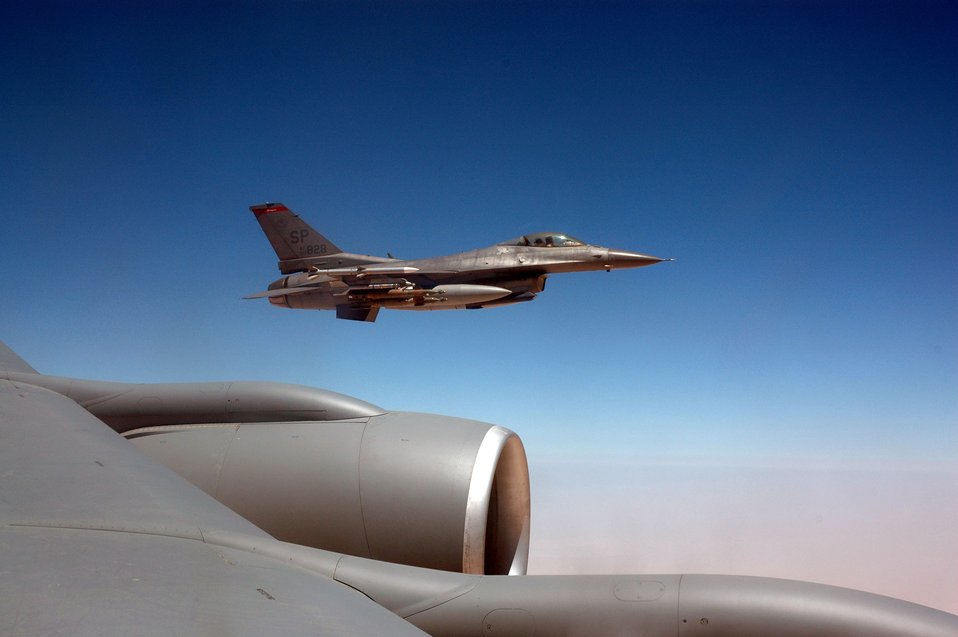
Airpower Summary for June 10, 2007

An F-16 Fighting Falcon flies beside a KC-135 Stratotanker after receiving fuel. Coalition tankers offloaded 2.7 million pounds of fuel, the equivalent of 403,000 gallons of automobile fuel, to 224 coalition aircraft June 9.